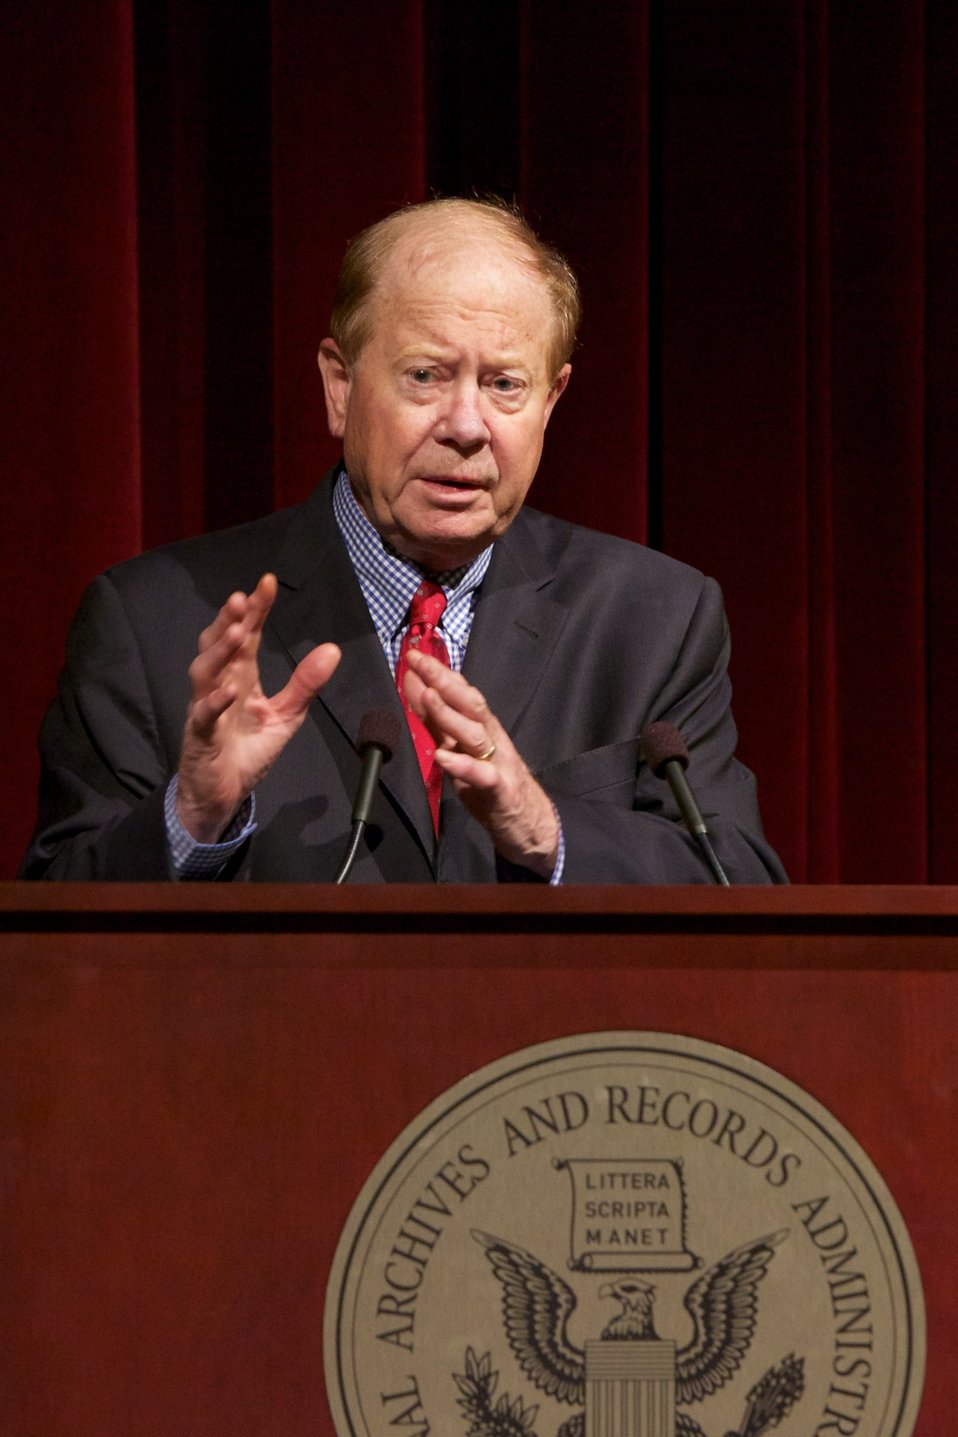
Revolutionary Summer; Joseph Ellis, author, discusses his book Revolutionary Summer: The Birth of American Independence